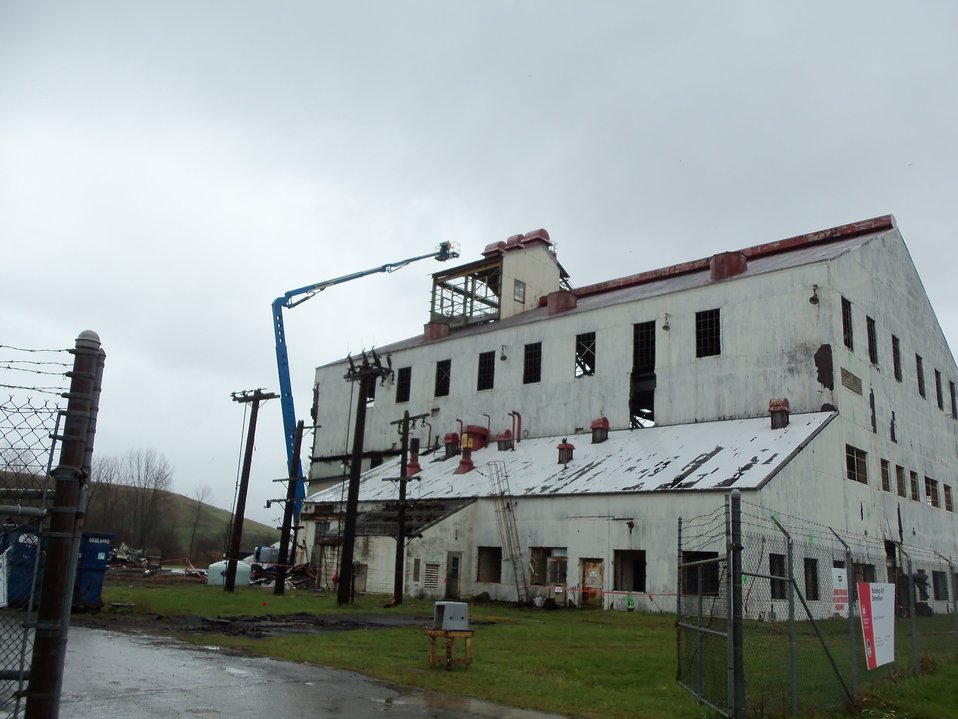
BLDG 401 ROOF ASBESTOS REMOVAL.

Activities from the Niagara Falls Storage Site, which is associated with the former Lake Ontario Ordnance Works. Formerly Utilized Sites Remedial Action Program (FUSRAP), a program initiated in 1974 to identify, investigate and clean up or control sites that were part of the Nation's early atomic energy and weapons program. Activities at the sites that are eligible for FUSRAP were conducted by Manhattan Engineer District (MED) or the Atomic Energy Commission (AEC), both predecessors of the Department of Energy (DOE). The U.S. Army Corps of Engineers was assigned management of FUSRAP by Congress in 1997.